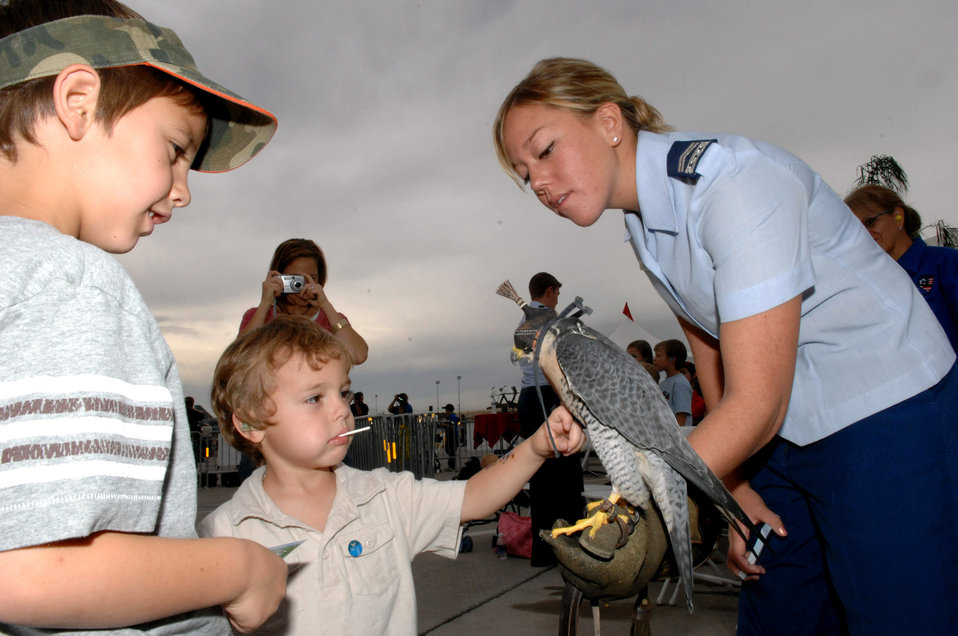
Face to face with a falcon

Air Force Academy Cadet 2nd Class Kimberly Robinson introduces Oblio to participants of a Make-a-Wish Foundation event Nov. 9 during the Aviation Nation air show at Nellis Air Force Base, Nev.